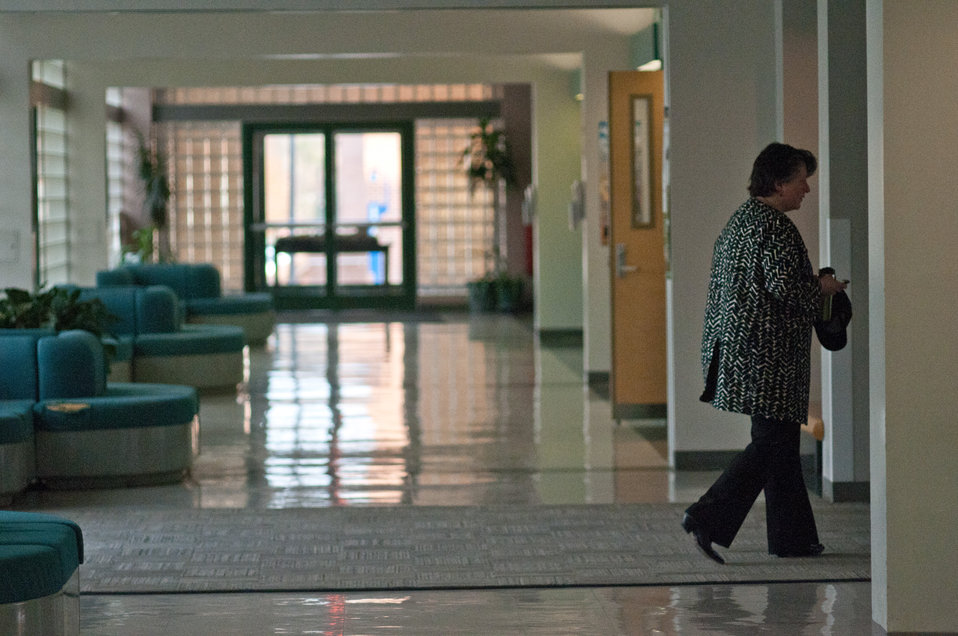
With the upcoming possibility of a government shutdown in a couple of days, U.S. Department of Agriculture (USDA) Deputy Secretary Kathleen Merrigan heads to an awaiting car after presenting the “Know your Farmer Know your Food” initiative to students and faculty at the Animal Sciences / Agricultural Engineering Building at the University of Maryland, at College Park, MD, on Thursday, April 7, 2011. Her talk covered support of local farmers; strengthening rural communities, promoting healthy eating, protecting natural resources; grants, loans and other support USDA provides as well as stories of innovation; industry and government cooperation; and careers opportunities in agriculture, ranching and the USDA.